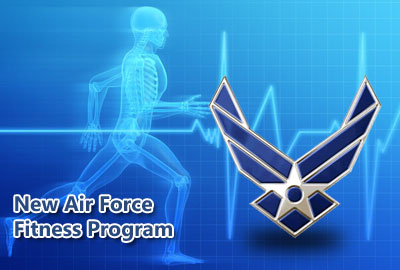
Air Force unveils new fitness program

Revisions to the Air Force fitness program take affect Jan. 1, 2010, and bring about some of the most significant changes to fitness standards in the last five years.